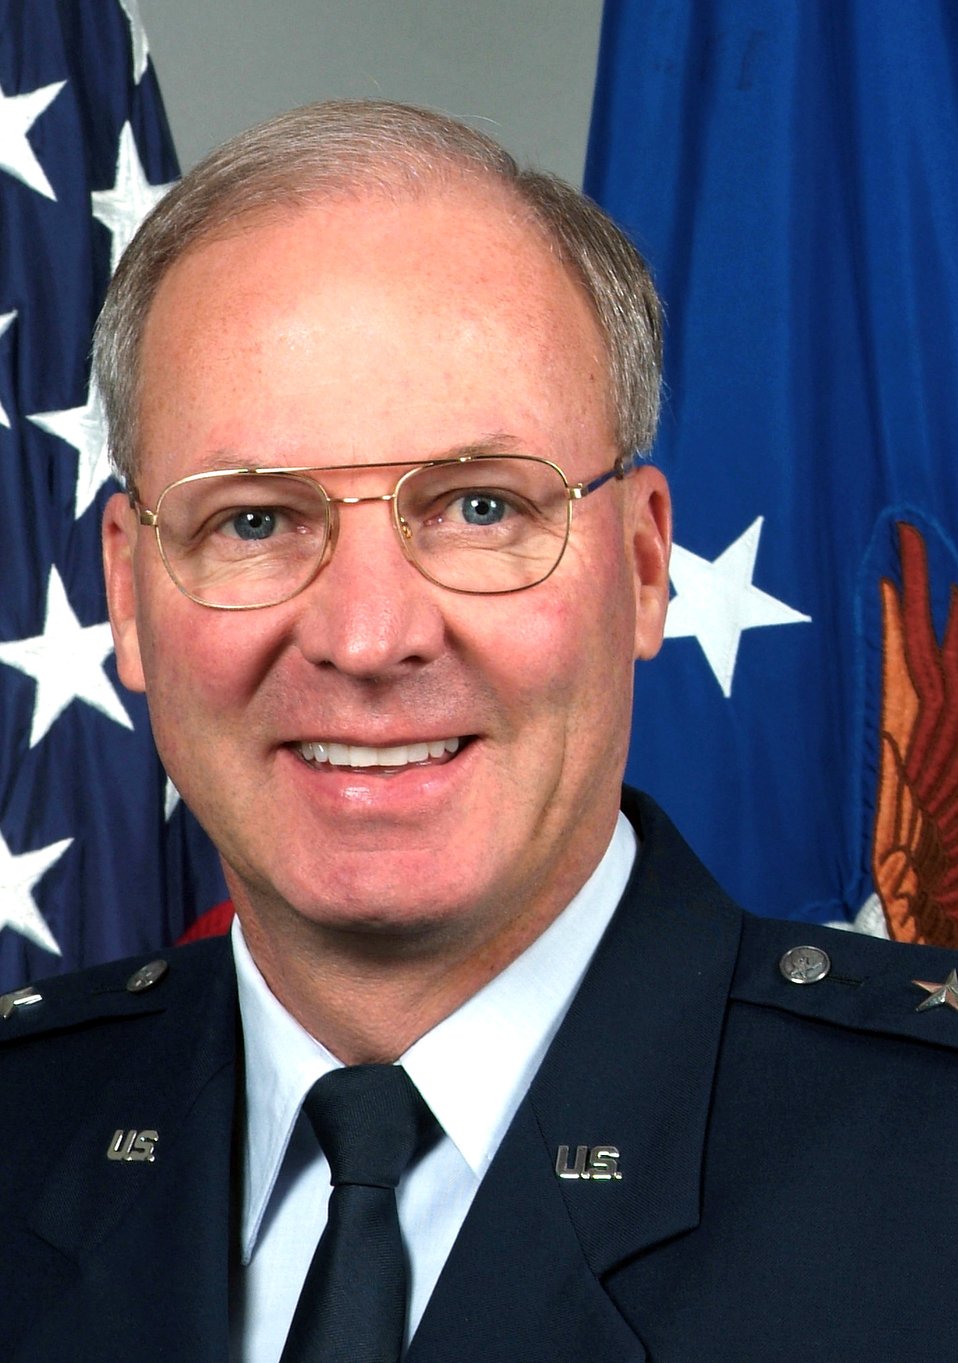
Air National Guard director

Lt. Gen. Craig R. McKinley has been named as the 12th director of the Air National Guard.